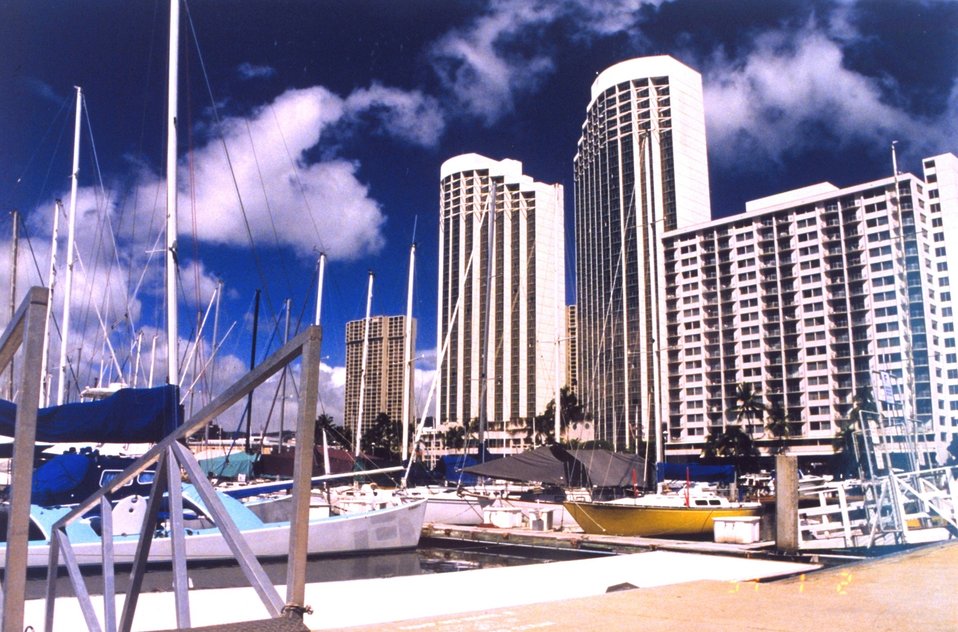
A view at the Ali Wai Yacht Harbor near Waikiki Beach.